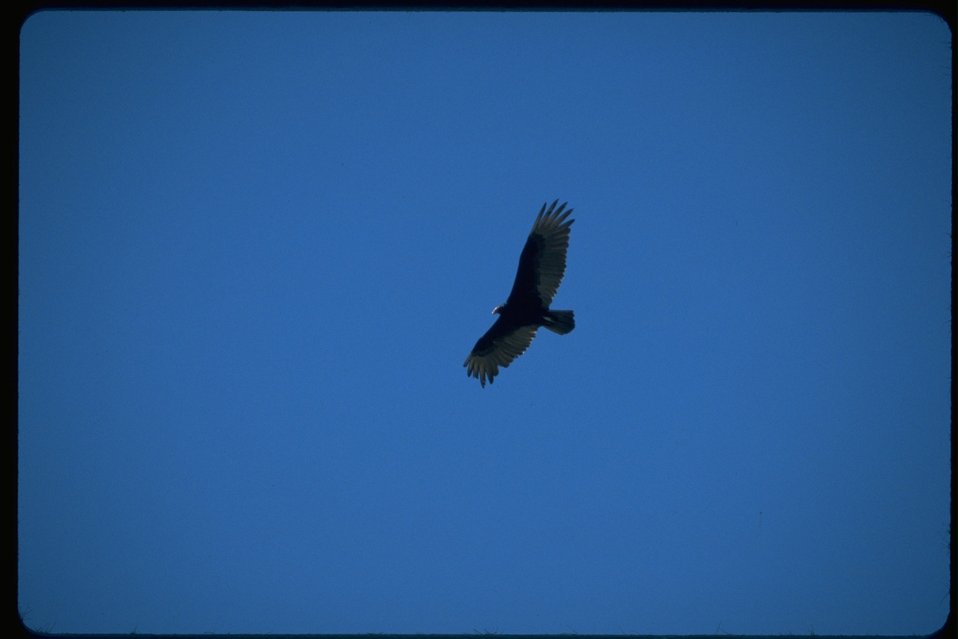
Turkey Vulture in flight.